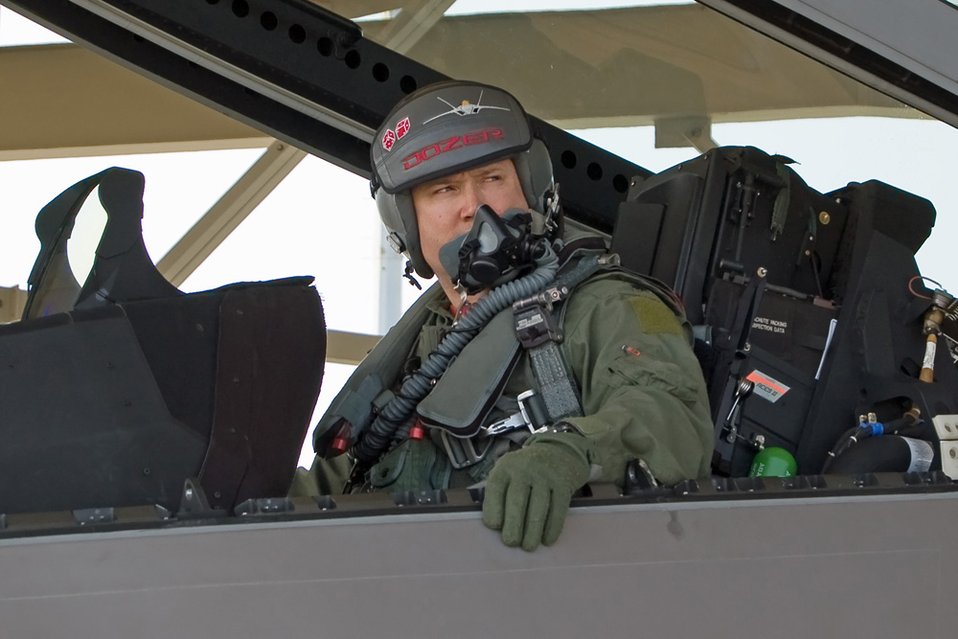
Elmendorf Airmen complete first F-22 deployment

Lt. Col. Mike Shower prepares for an F-22 Raptor training sortie Feb. 4 at Tyndall Air Force Base, Fla. Members of the 3rd Wing and Air Force Reserve Command's 477th Fighter Group from Elmendorf AFB, Alaska, combined for its first F-22 Raptor deployment to Tyndall AFB for Combat Archer. The 132 Reserve and active-duty Airmen and eight F-22s from Alaska were in Florida for Weapons System Evaluation Program training. Colonel Shower is the 90th Fighter Squadron commander.